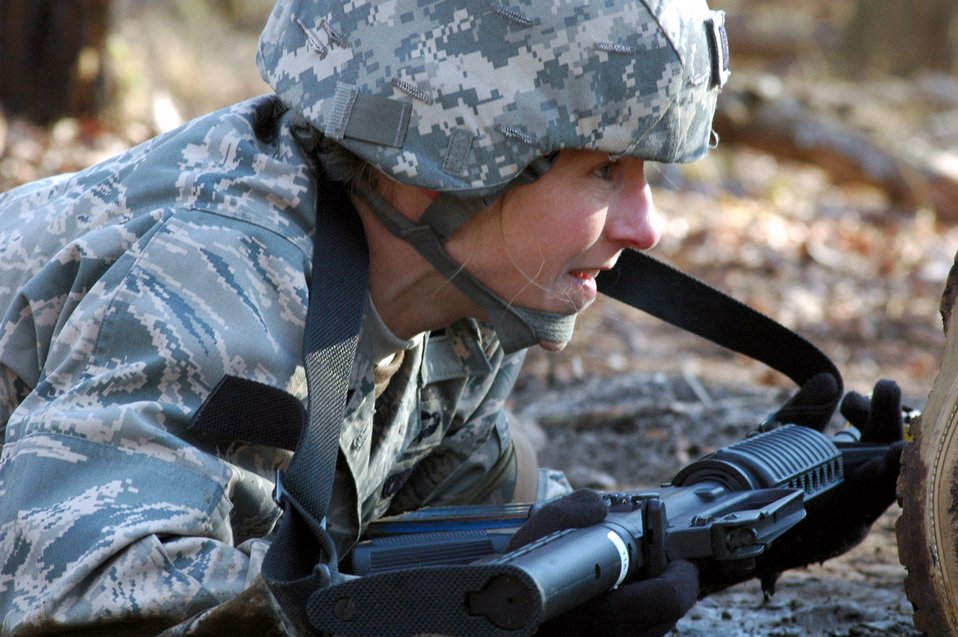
Airmen complete first Air Advisor Course

Capt. Dawn Fitzgerald goes through the combat first aid obstacle course Feb. 29 on a range on Fort Dix, N.J. Taught by Expeditionary Operations School officials, Air Force Expeditionary Center's Air Advisor Course 08-1 prepares Airmen deploying to Afghanistan and Iraq who will in turn be training military forces in those countries. Captain Fitzgerald is from Nellis Air Force Base, Nev.